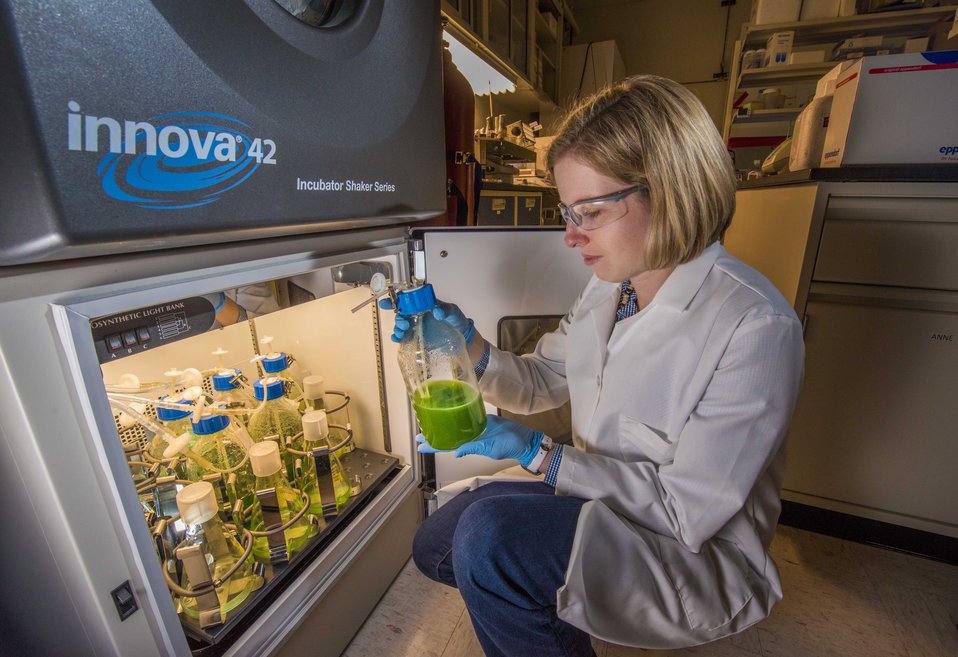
Sandia Truman Fellow looks at a flask of cyanbacteria with precipitated fatty acid floating on top.

She has engineered two strains of cyanobacteria to produce free fatty acids, a precursor to fuels, as she studies the direct conversion of carbon dioxide into biofuels by photosynthetic organisms.